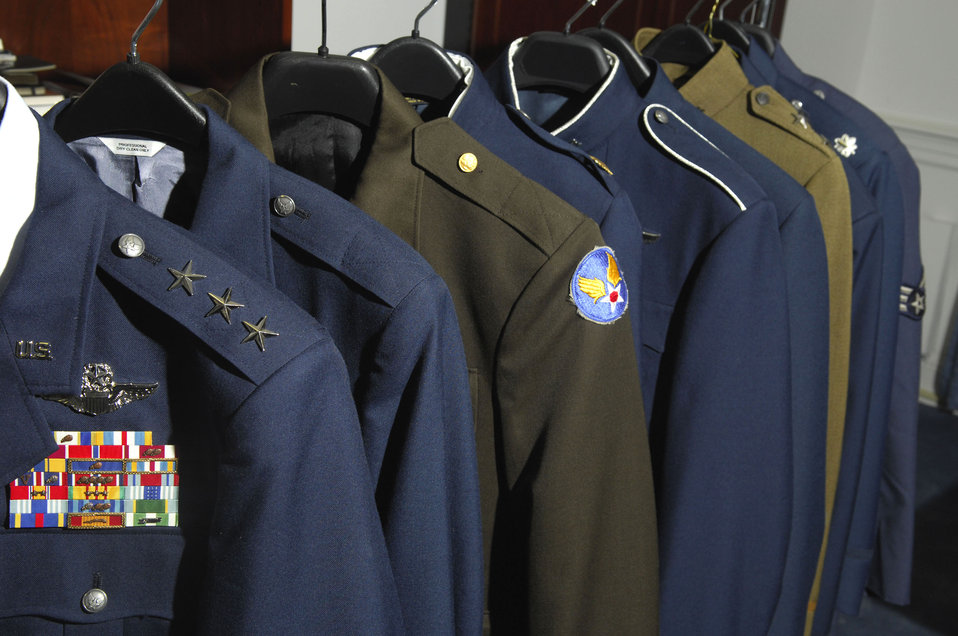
Air Force official discusses uniform updates

The new Airman Battle Uniforms will start being distributed to Airmen participating in Air Expeditionary Force 7 and 8 before the rest of the Air Force receives them. The new service coat is now in it's developing stage and the service coat has gone through many changes over the years.